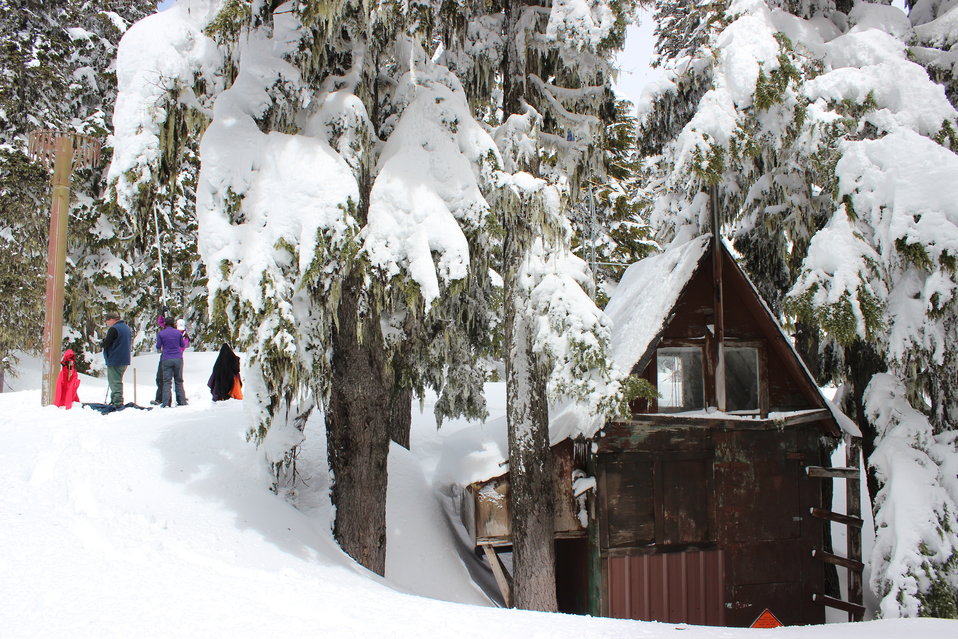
U.S. Department of Agriculture (USDA) Natural Resource Conservation Service (NRCS) hydrologists measure snow near the Snowpack Telemetry (SNOTEL) site on Mt Hood, OR.